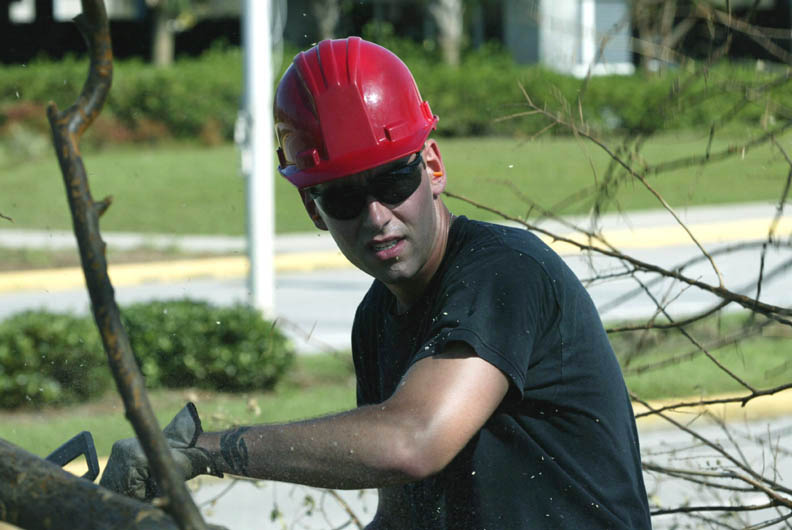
Virginia Air Guard responds to Florida storms

PENSACOLA, Fla. -- Senior Airman Brian Rizzo cuts limbs off of a downed tree at the Pensacola Regional Airport here Sept. 17. He is assigned to the Virginia Air National Guard's 203rd Red Horse Squadron. The squadron came to help clean up after Hurricane Frances and stayed after Hurricane Ivan came ashore.